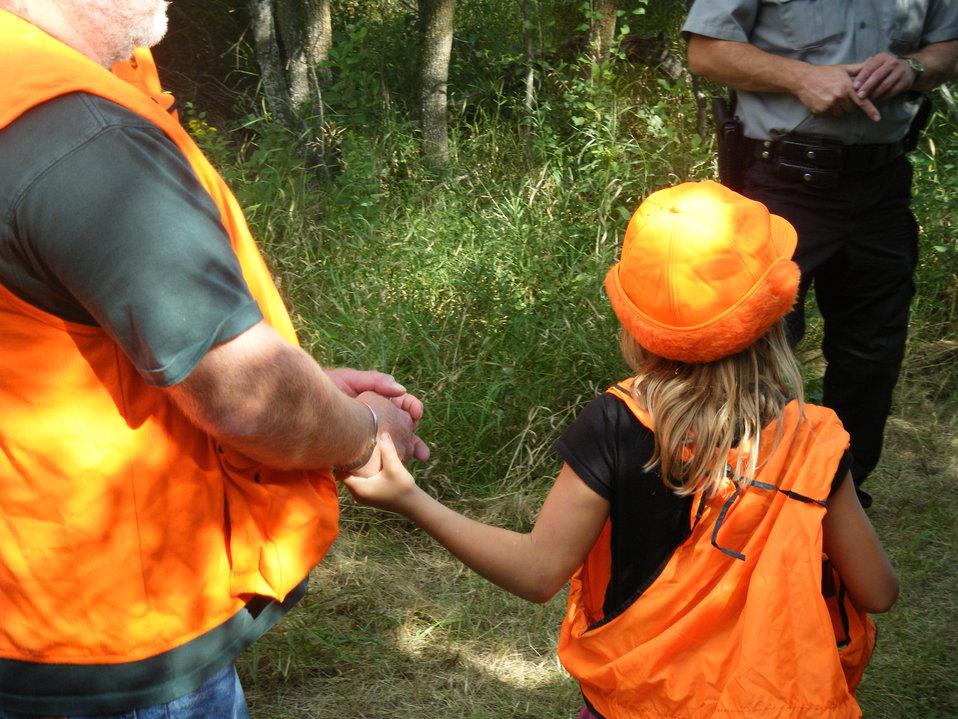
2011 Greenwing Day - Game Warden scenario session

Des Lacs National Wildlife Refuge, Tasker's Coulee

Busted again!